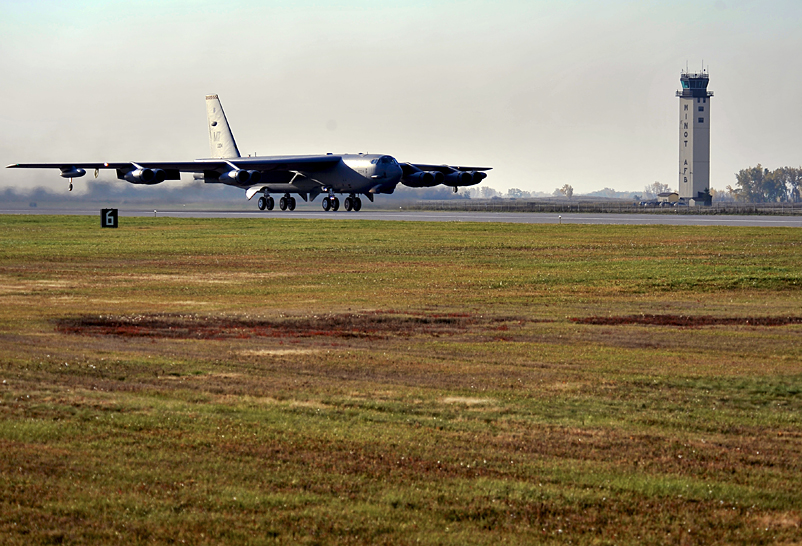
Air Force Small Business Fall Training Conference

B-52 Stratofortresses, like the one shown here, from the 69th Bomb Squadron at Minot Air Force Base, N.D., are deploying to Andersen AFB, Guam, to support the U.S. Pacific Command’s continuous bomber presence.